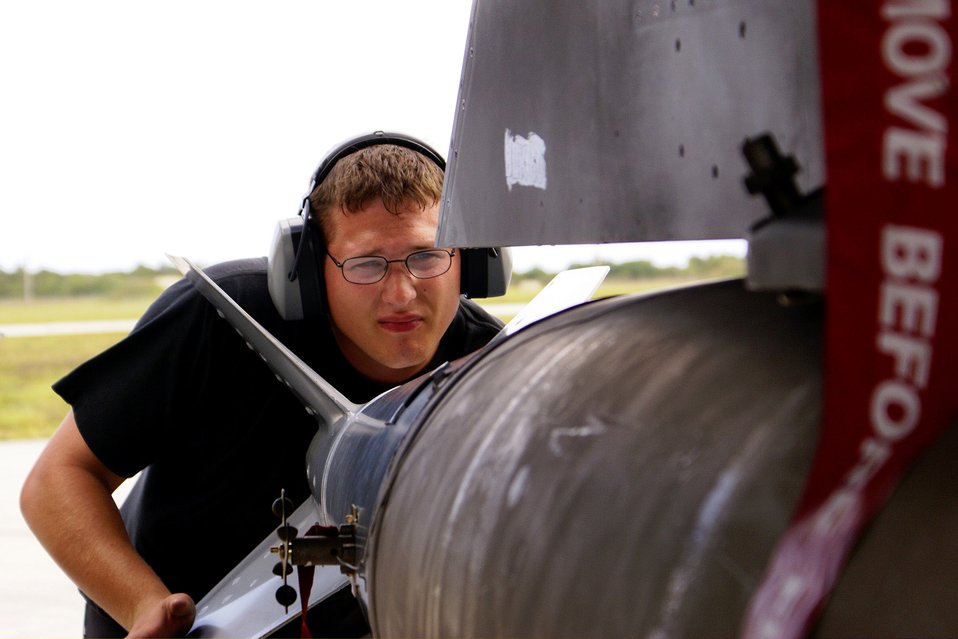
Maintenance crews prep fighters at Cope North

Senior Airman Shawn Dietz guides an MK-84 bomb into place on an F-16 Fighting Falcon June 21 at Andersen AFB, Guam. Airman Dietz is a weapons load crew member from the 27th Aircraft Maintenance Squadrom at Cannon AFB, N.M. Members of the 27th AMXS are deployed to Andersen AFB for four months, and are currently participating in Exercise Cope North.